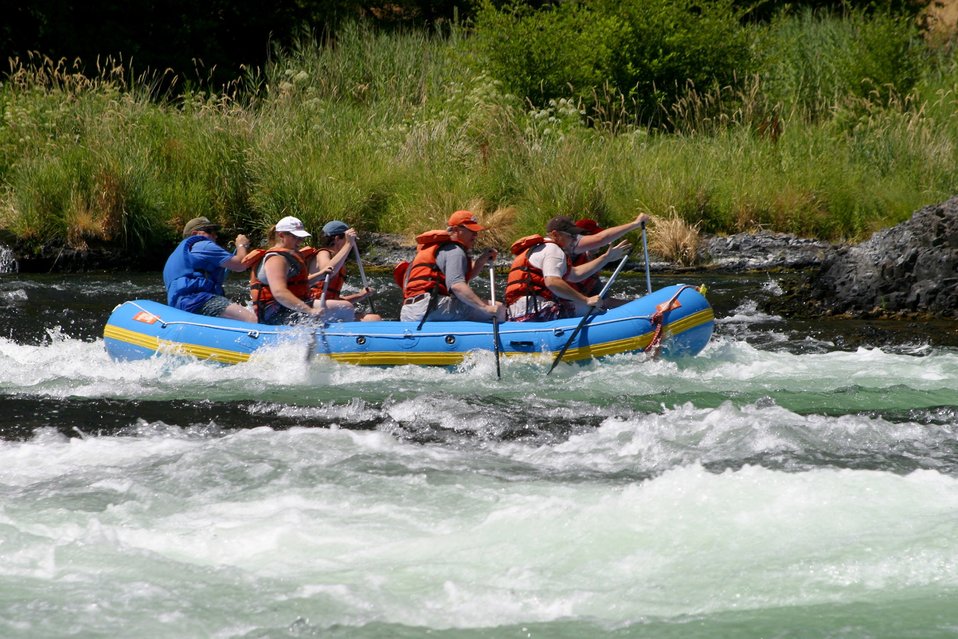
Oak Springs is a Class IV Rapids. The left channel has shallow rocks, large standing waves, turbulent currents and a large hole during high flows. The right channel has a large hole, shallow rocks, and turbulent currents. 7/26/03 Pelton Dam 3600 cfs: Moody Rapids 4300 cfs.